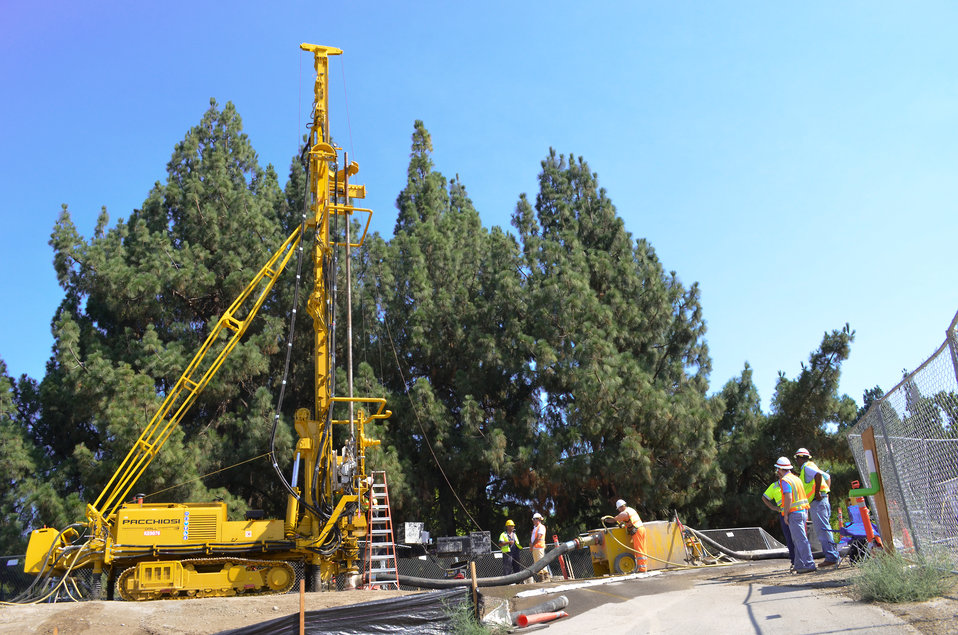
Jet-grout drill awaits nighttime-only levee work

Contractors for the U.S. Army Corps of Engineers Sacramento District prepare a drill rig a few feet from the Watt Avenue bridge in Sacramento Calif., July 25, 2013. The drill will lower through holes cut in the bridge to install a seepage cutoff wall in the levee beneath.